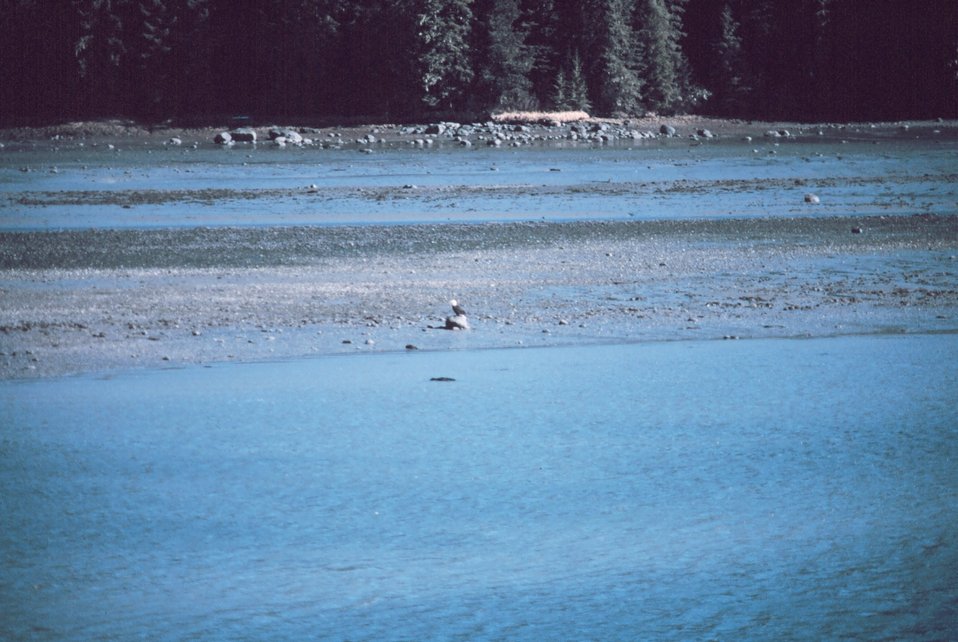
An eagle on the beach at Wrangell Narrows